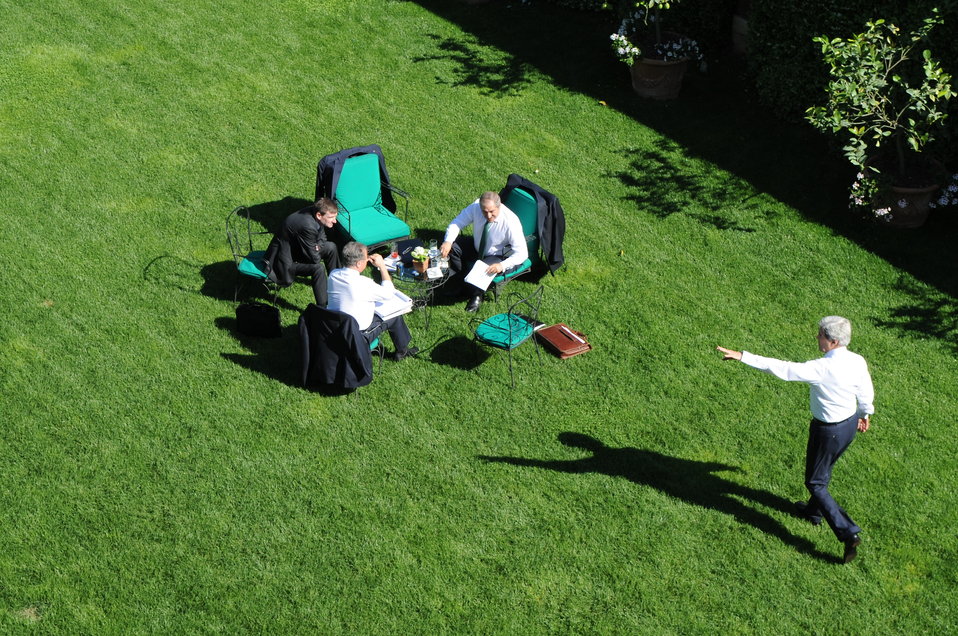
Secretary Kerry Meets With Jordanian Foreign Minister Judeh

U.S. Secretary of State John Kerry points to the garden at Villa Taverna, the U.S. ambassador's residence in Rome, Italy, during a meeting with Jordanian Foreign Minister Nasser Judeh on May 9, 2013.